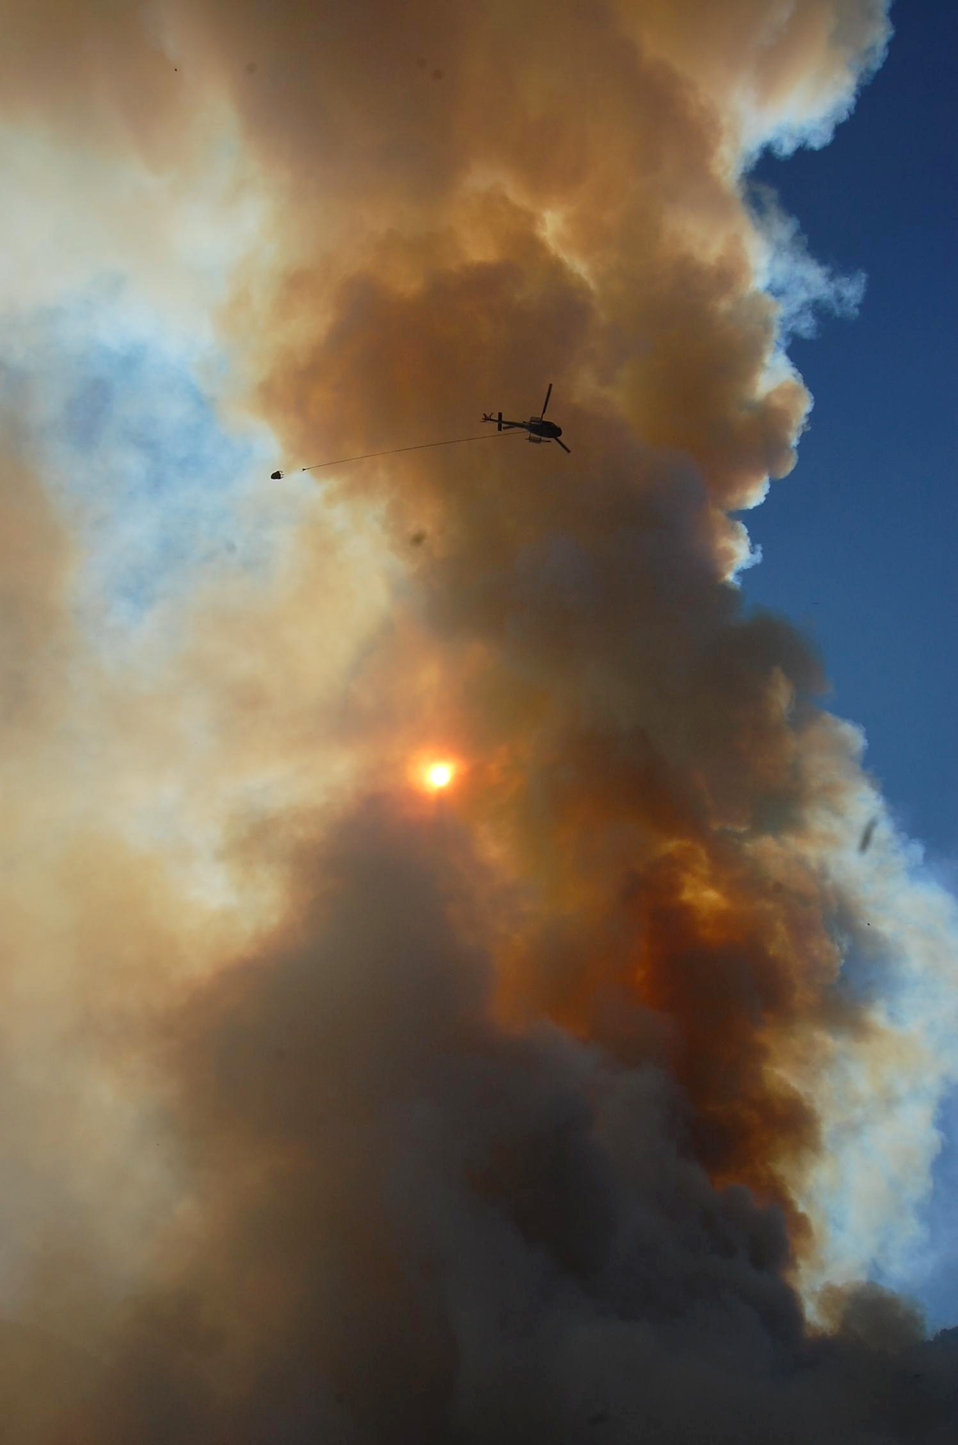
Helicopter flies over the Miner Paradise Complex Fire after making a water drop. The Miner Paradise Complex Fire in the Gallatin National Forest consists of three fires near Livingston, Gardiner, and Gallatin, MT began on Aug. 16, 2013 by lightning and has consumed approximately 11,658 acres and is 15% contained.